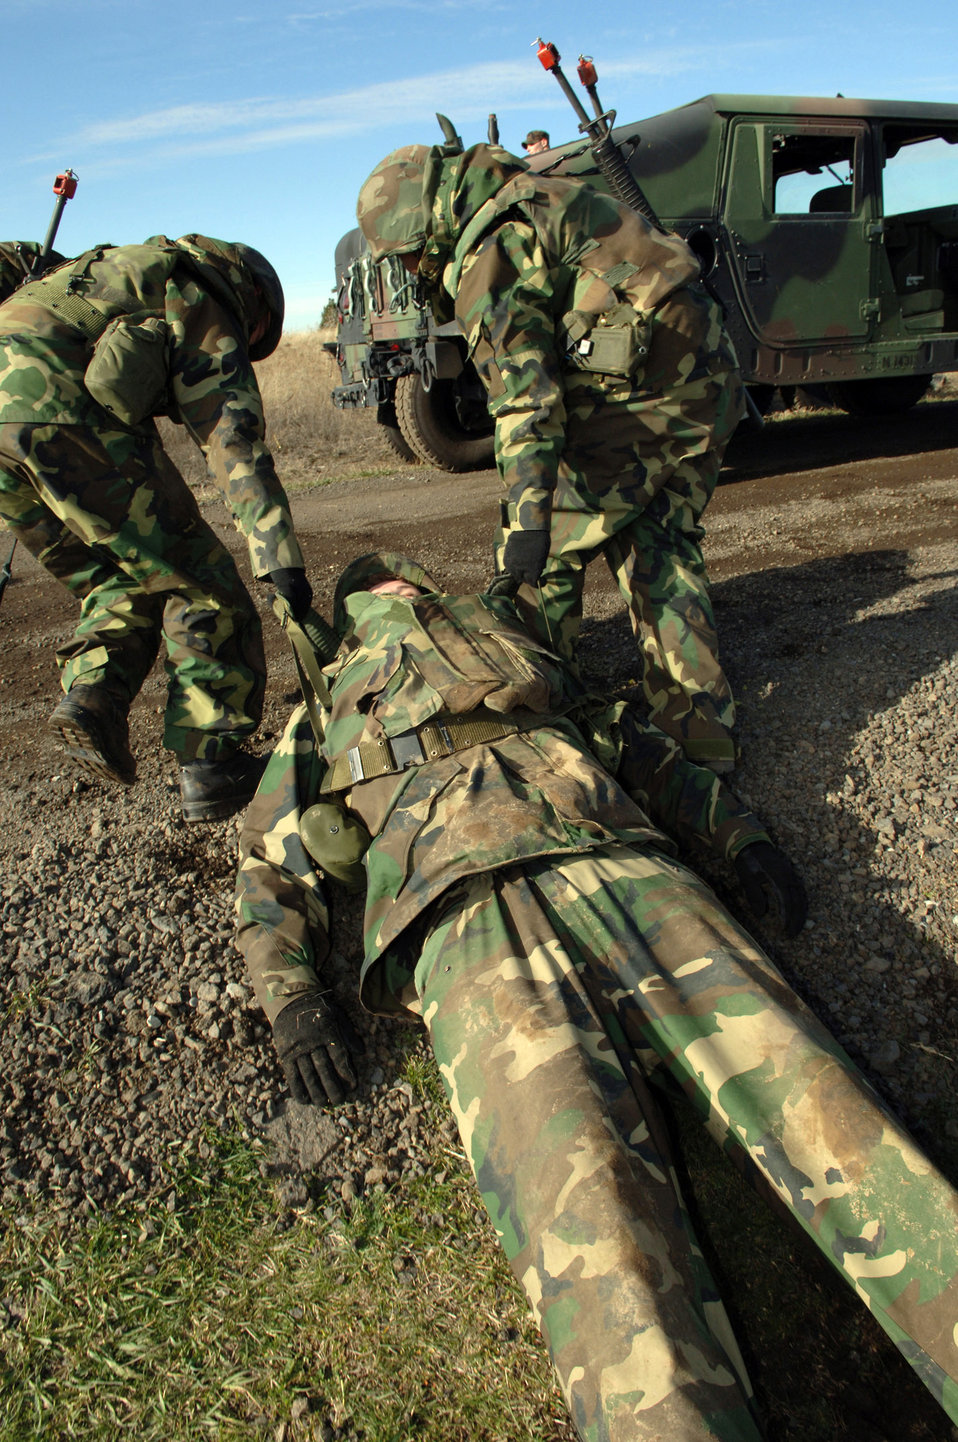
SF combat training

FAIRCHILD AIR FORCE BASE, Wash. (AFPN) -- Students practice self-aid buddy care by removing an injured victim from the field during the course. All personnel scheduled to be deployed as of January 2006 will go through the four-day training course.